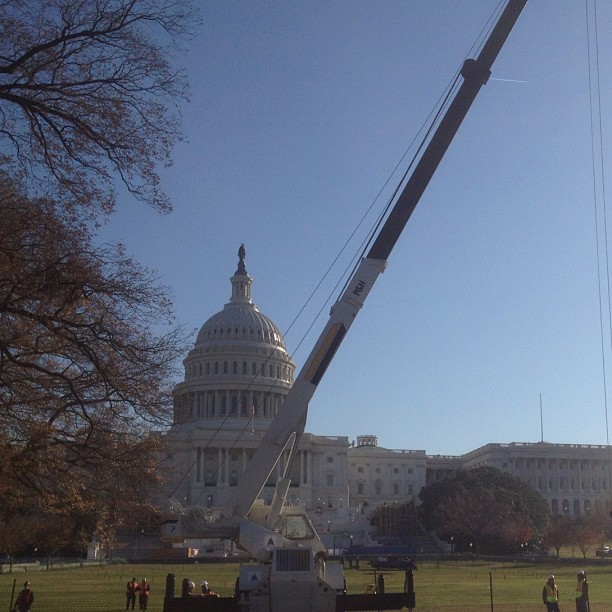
AOC crews in place for arrival of Capitol Christmas Tree.